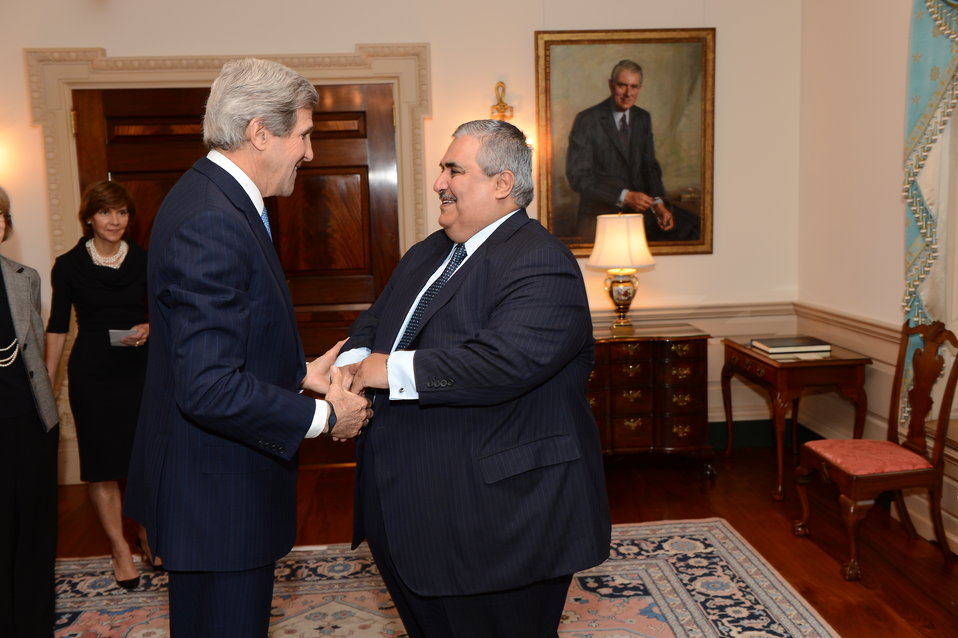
Secretary Kerry Meets With Bahraini Foreign Minister Sheikh Khalid bin Ahmed al Khalifa

U.S. Secretary of State John Kerry meets with Bahraini Foreign Minister Sheikh Khalid bin Ahmed al Khalifa, at the U.S. Department of State in Washington, D.C., on April 29, 2013.